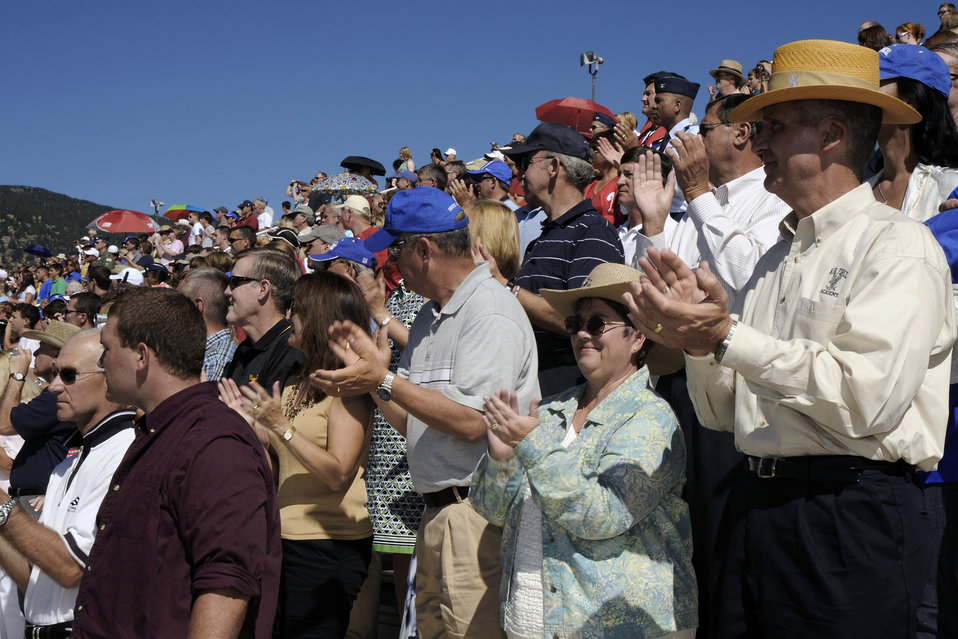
Acceptance Parade

USAF ACADEMY, CO--Friends and family cheer during the Acceptance Parade. The parade marks the official end of Basic Cadet Training and formally welcomes the new class into the cadet wing.